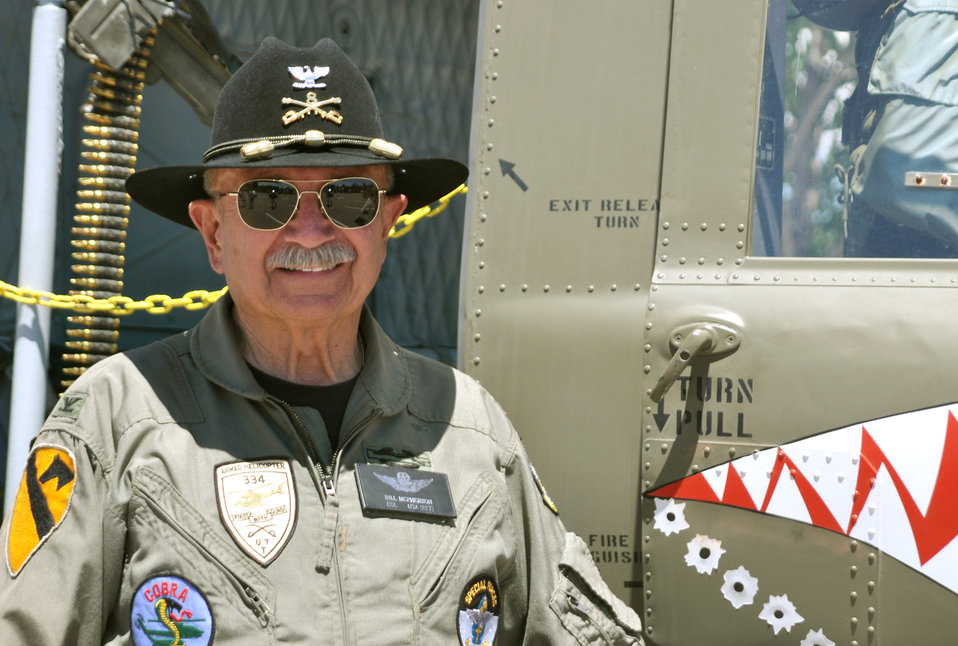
Retired Col. Bill McPherson

Retired Army Col. Bill McPherson is the honorary commander for the 34th Aeromedical Evacuation Squadron at the 302nd Airlift Wing at Peterson Air Force Base, Colo. Colonel McPherson displayed and gave tours of his restored UH-1 (M) Huey to 302nd AW families during the wing's Family Day.